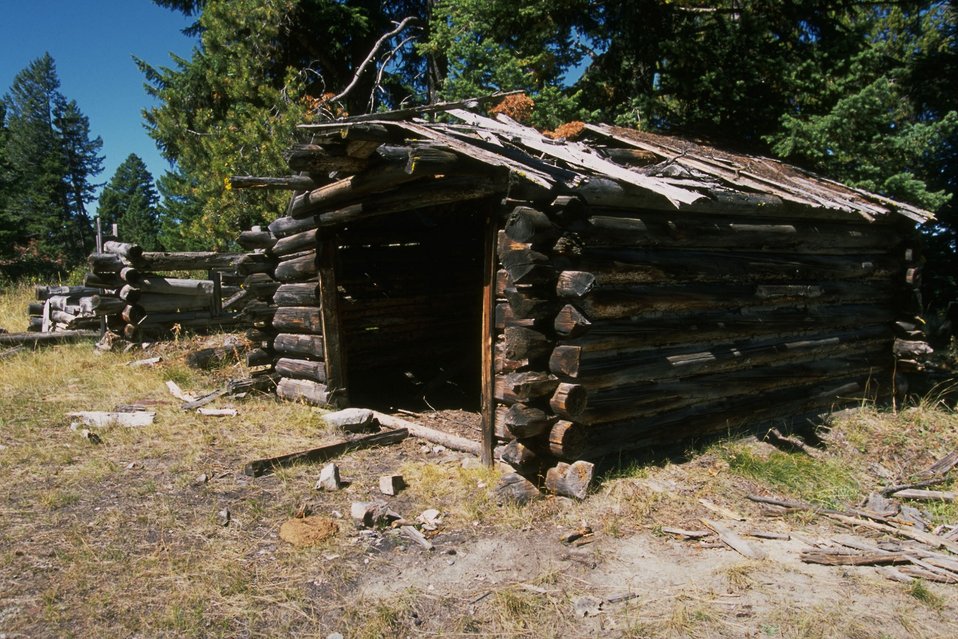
Dilapidated cabing in Coloma Ghost Town